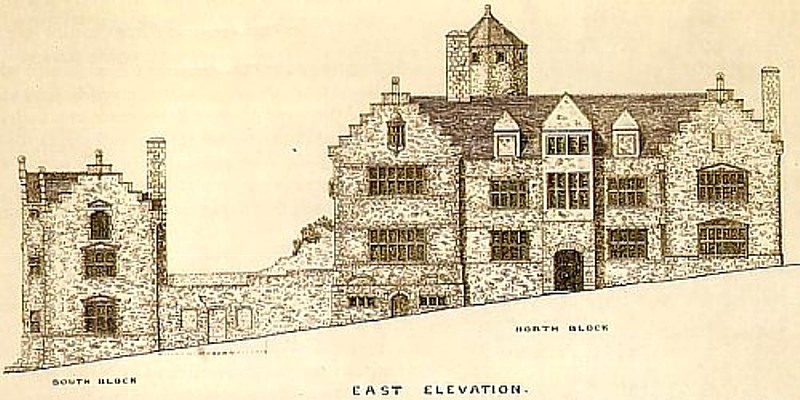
Plas Mawr Conwy Wales